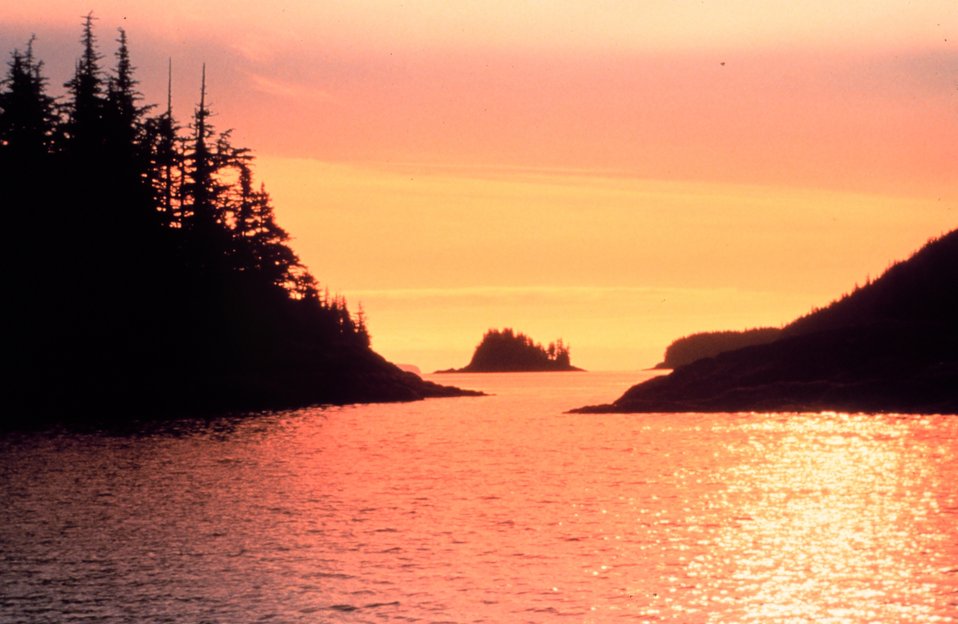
A golden glow suffuses the atmosphere while reflecting off the waters of Prince William Sound at sunset